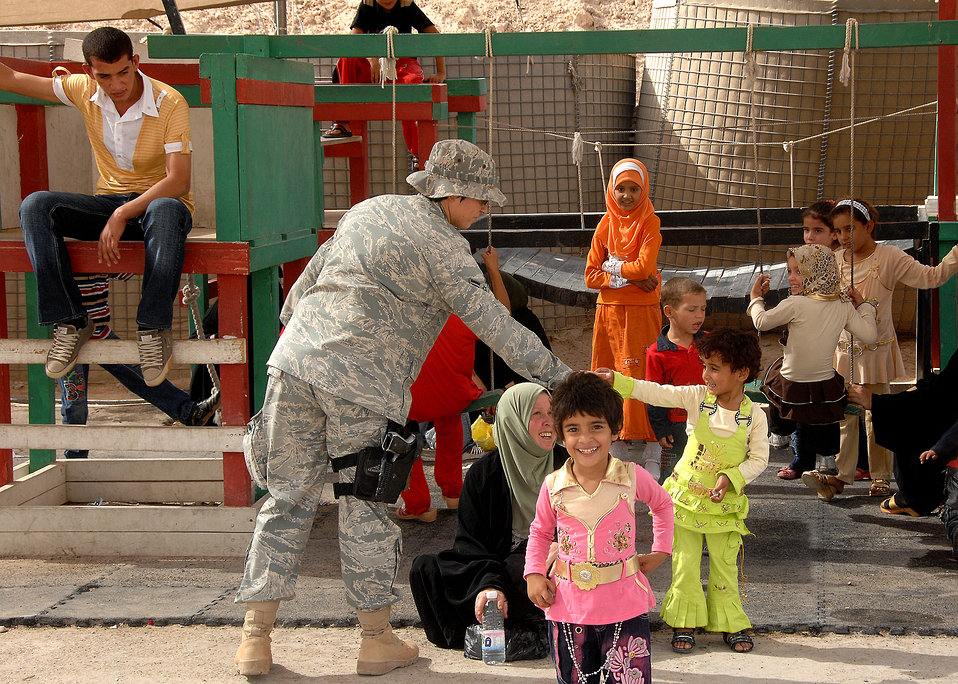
Airmen play goodwill role at Camp Bucca

A security forces member from the 586th Air Expeditionary Group plays with Iraqi children at Camp Bucca, Iraq, while they wait for transport to the detainee visitation center recently. The 586th AEG provides security and transport to the center for nearly 400 visitors who are allowed to visit daily with detainees being held at the theater internment facility.